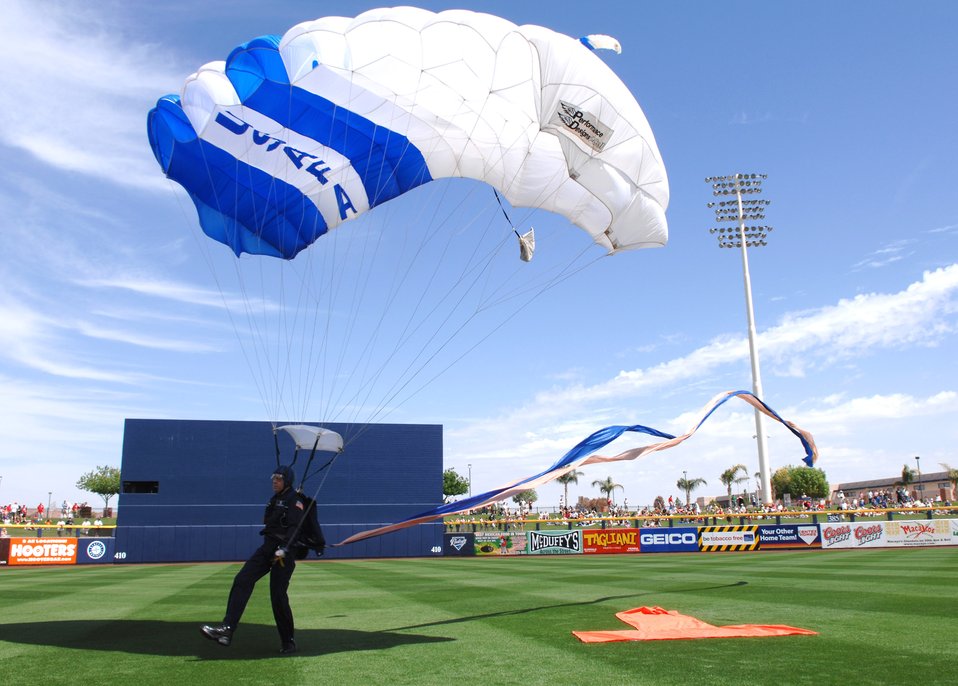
Play ball!

The Wings of Blue parachute demonstration team jump in with the game ball as the city of Peoria, Ariz., and the Peoria Sports Complex play host to Air Force Week during a 2007 spring training baseball game between the San Diego Padres and the Milwaukee Brewers March 21.